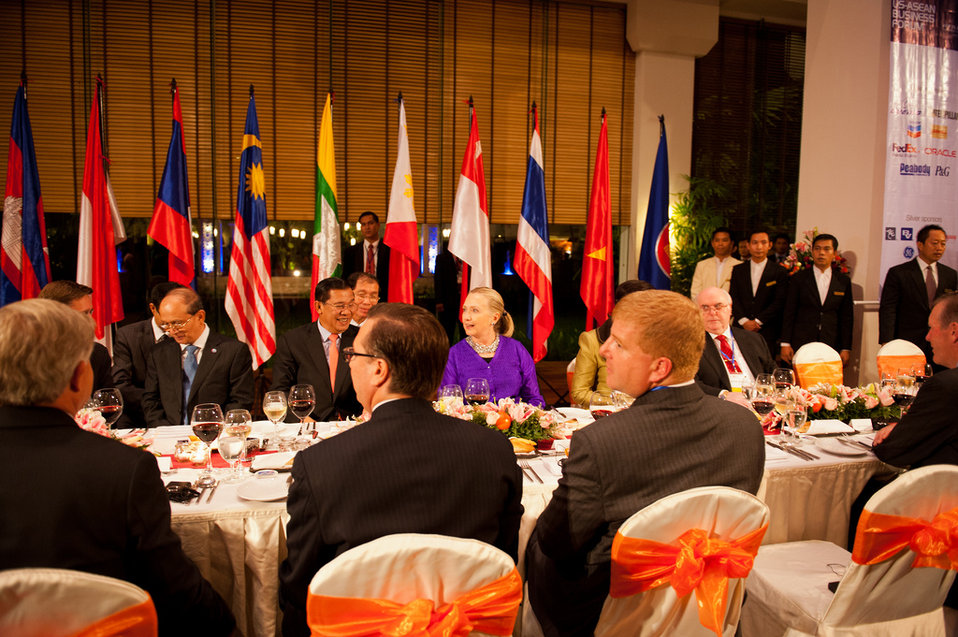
Secretary Clinton at the U.S.-ASEAN Business Forum and Dinner

U.S. Secretary of State Hillary Rodham Clinton participates in the U.S.-ASEAN Business Forum and Dinner in Siem Reap, Cambodia, on July 13, 2012.